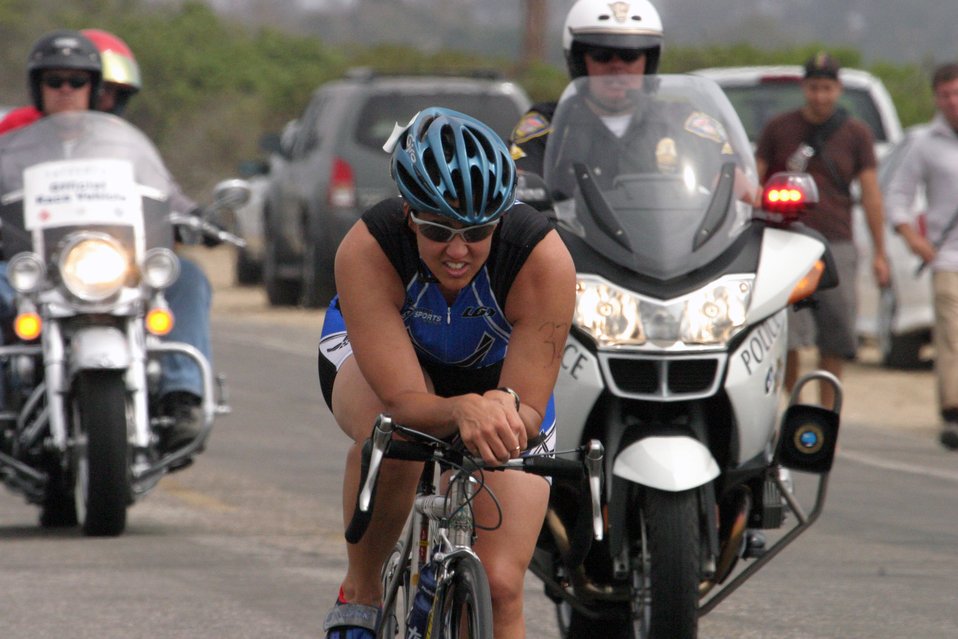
2007 Armed Forces Triathlon Championship

Maj. Erika Foster gains some ground during the 2007 Armed Forces Triathlon Championship at Naval Base Ventura County-Point Mugu, Calif., July 28. Major Foster, with the AFROTC detachment at Rochester Institute of Technology, N.Y., was the third top Air Force women's finisher and was selected to the combined 2007 Armed Forces Triathlon Team.